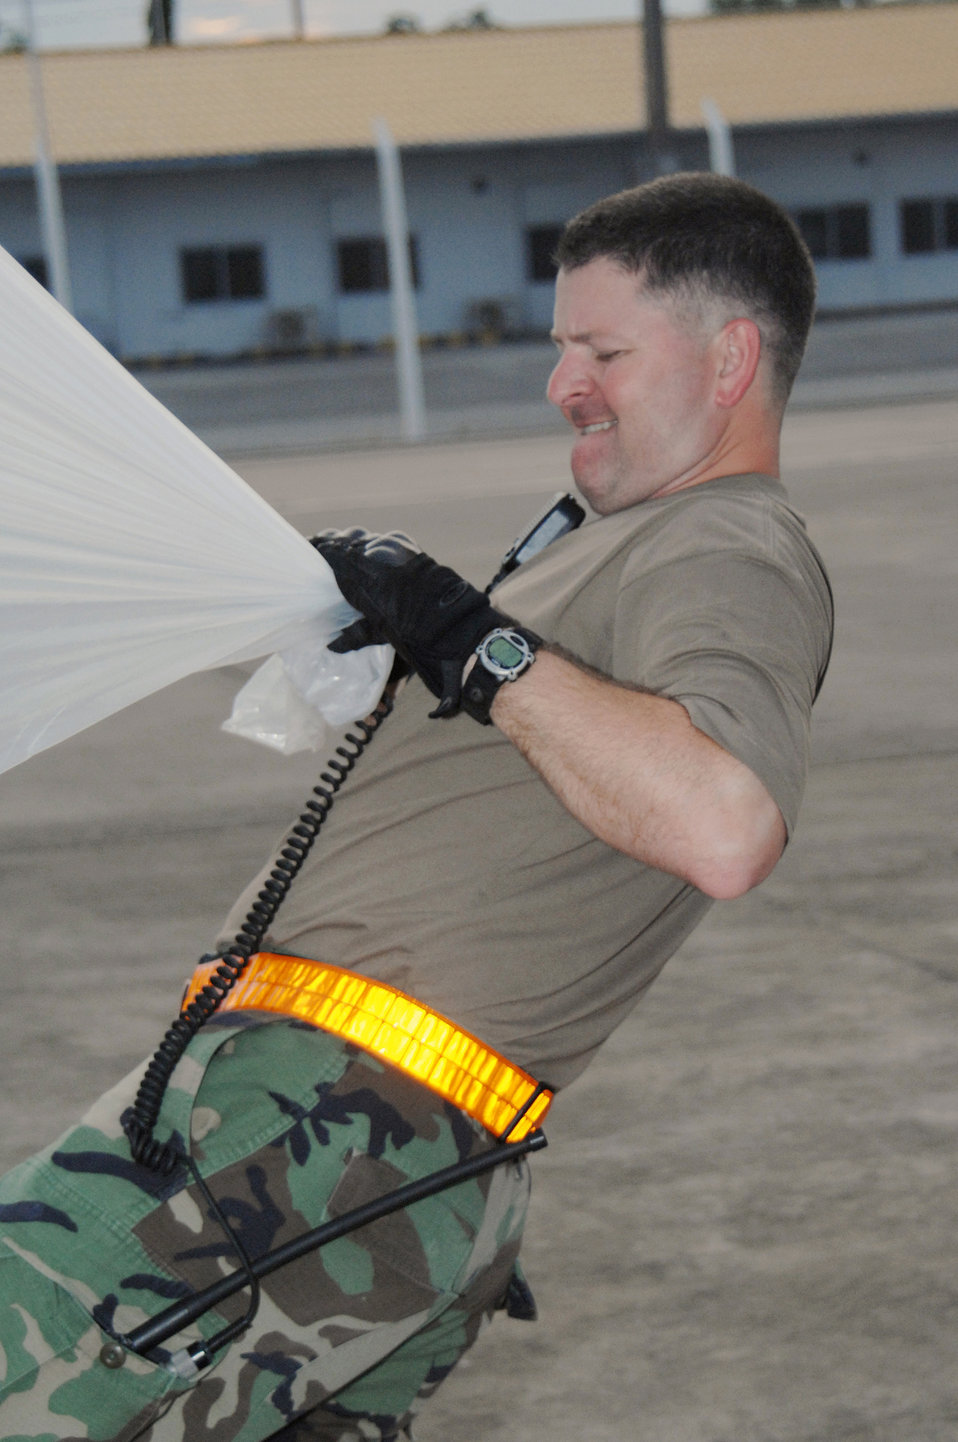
Help is on the Way

Master Sgt. Jon Harston removes plastic lining from a pallet of humanitarian relief supplies being transferred from a Boeing 747 commercial airplane May 16 at Utapao Thai Royal Navy Air Base, Thailand, for delivery to Burma. Sergeant Harston is with the 36th Contingency Response Group at Andersen Air Force Base, Guam.